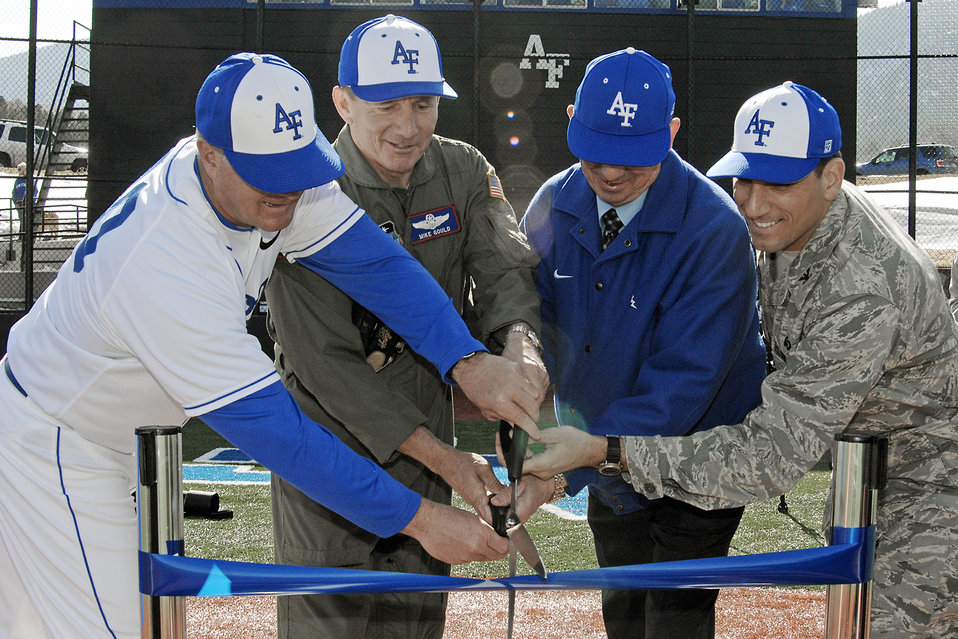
Falcons win baseball home opener

Coach Mike Hutcheon, Lt. Gen Mike Gould, Dr. Hans Mueh and Col. Rick LoCastro cut the ribbon to inaugurate the newly renovated Falcon Field at the U.S. Air Force Academy in Colorado March 2, 2010. The Air Force baseball team beat Colorado Christian in a 15-5 victory in its home-opener.